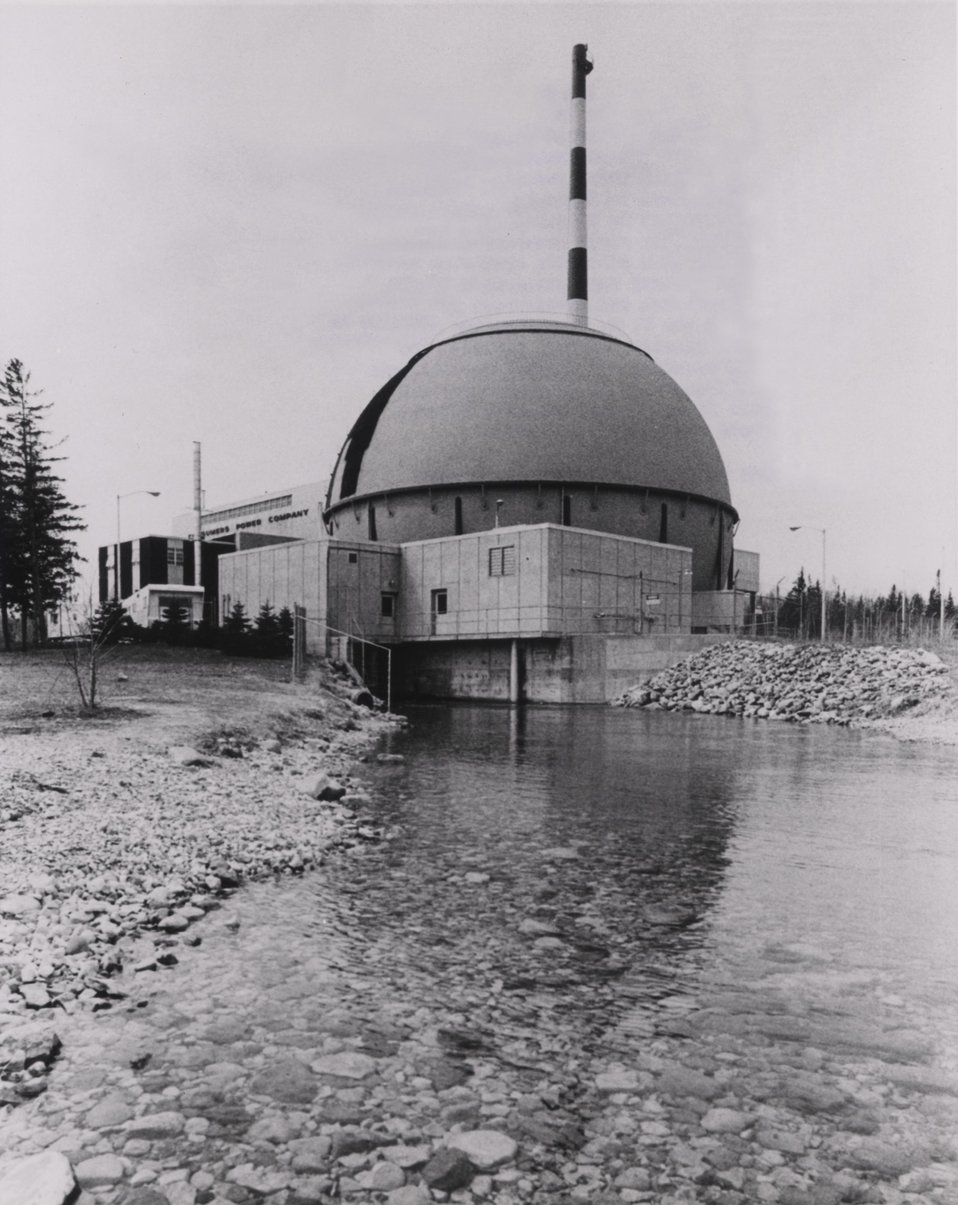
Consumer Power Company's Big Rock Point Nuclear electric generating station at Charlevoix, MI, on Lake Michigan.